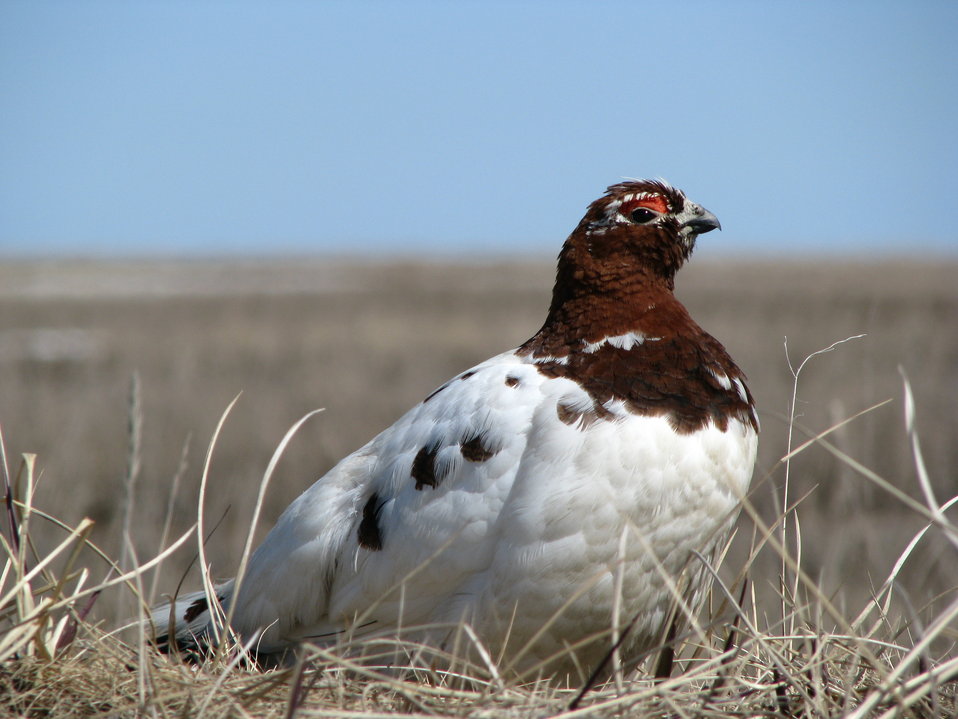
Willow ptarmigan

USFWS Yukon Delta NWR